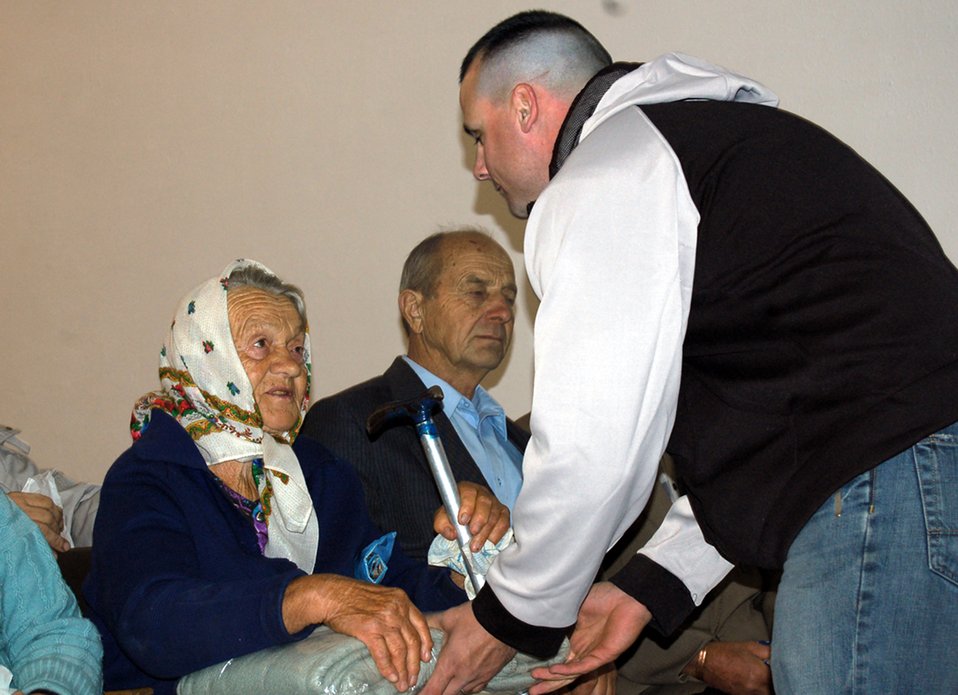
Manas Airmen honor village elderly

Tech. Sgt. Dennis Mercier hands a blanket to one of the villagers during the local Elder's Day celebration Oct. 1in Oktyabra'skoe, Kyrgyzstan. Airmen from Manas Air Base handed out packages including blankets, rice, pasta, sugar, tea, cookies, crackers, thermos', insulated mugs, and more to elderly citizens. Sergeant Mercier is a member of the 376th Expeditionary Security Forces Squadron.